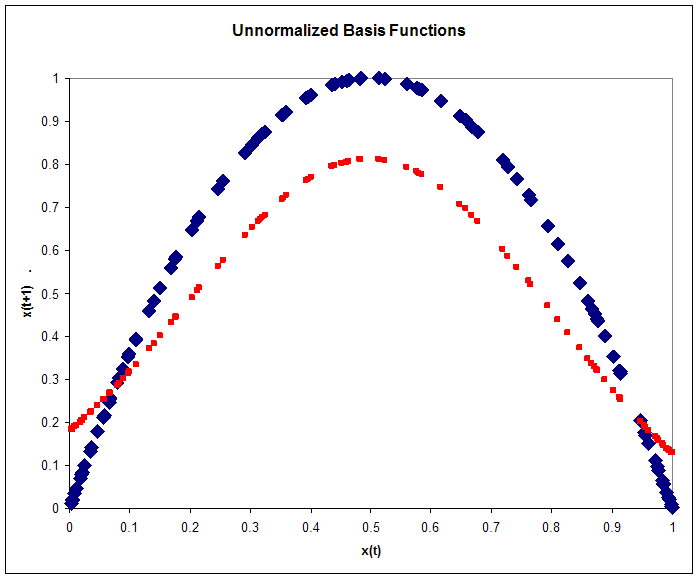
Radial basis function - Figure 7: Unnormalized basis functions. The Logistic map (blue) and the approximation to the logistic map (red) after one pass through the training set.